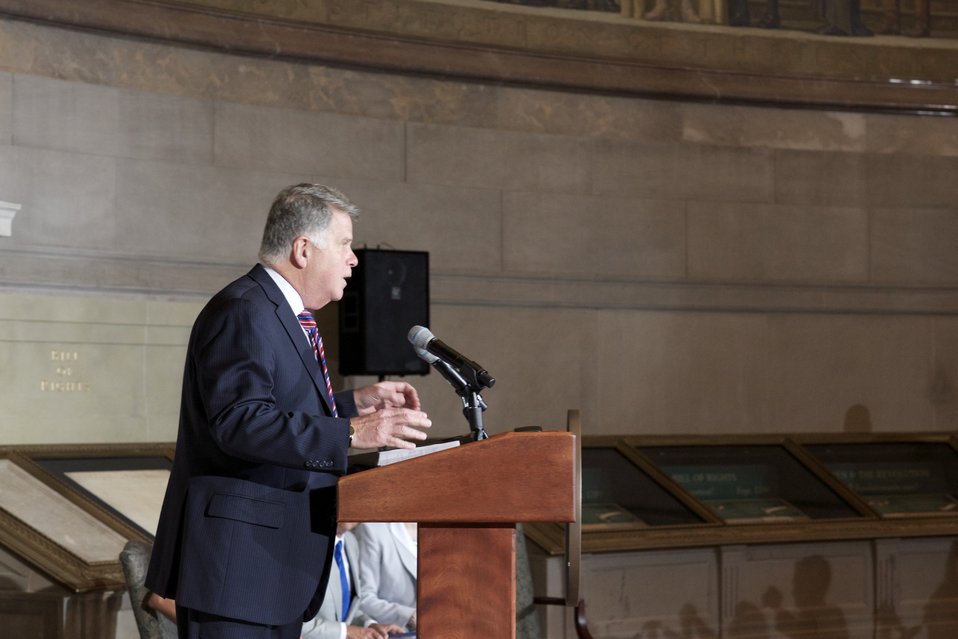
Naturalization Ceremony with Michelle Obama